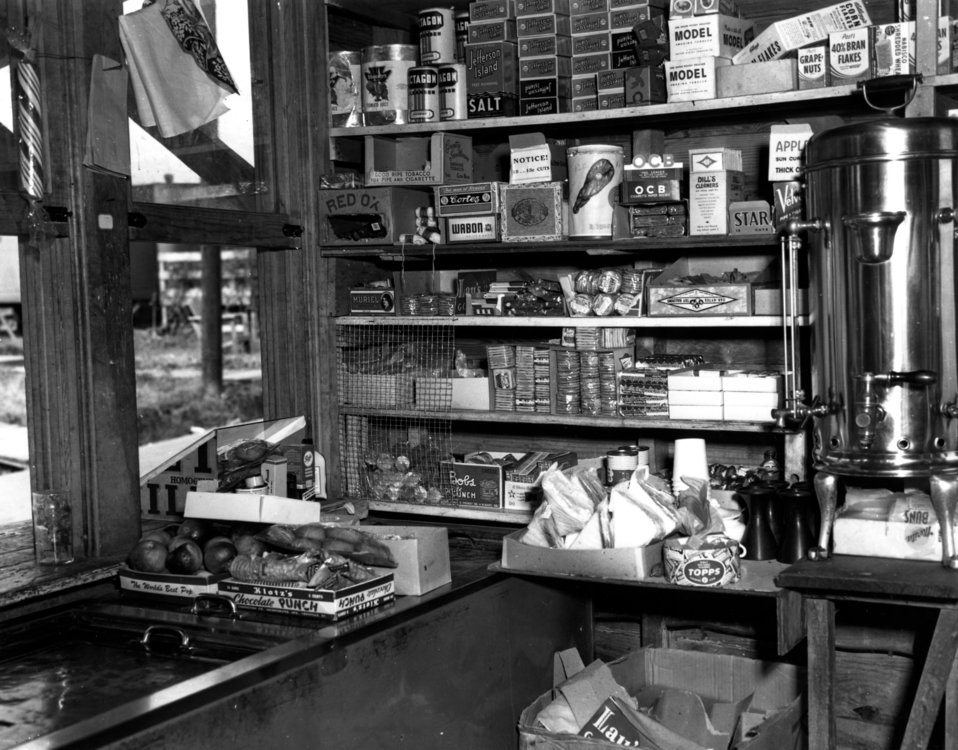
Business activity at Oak Ridge